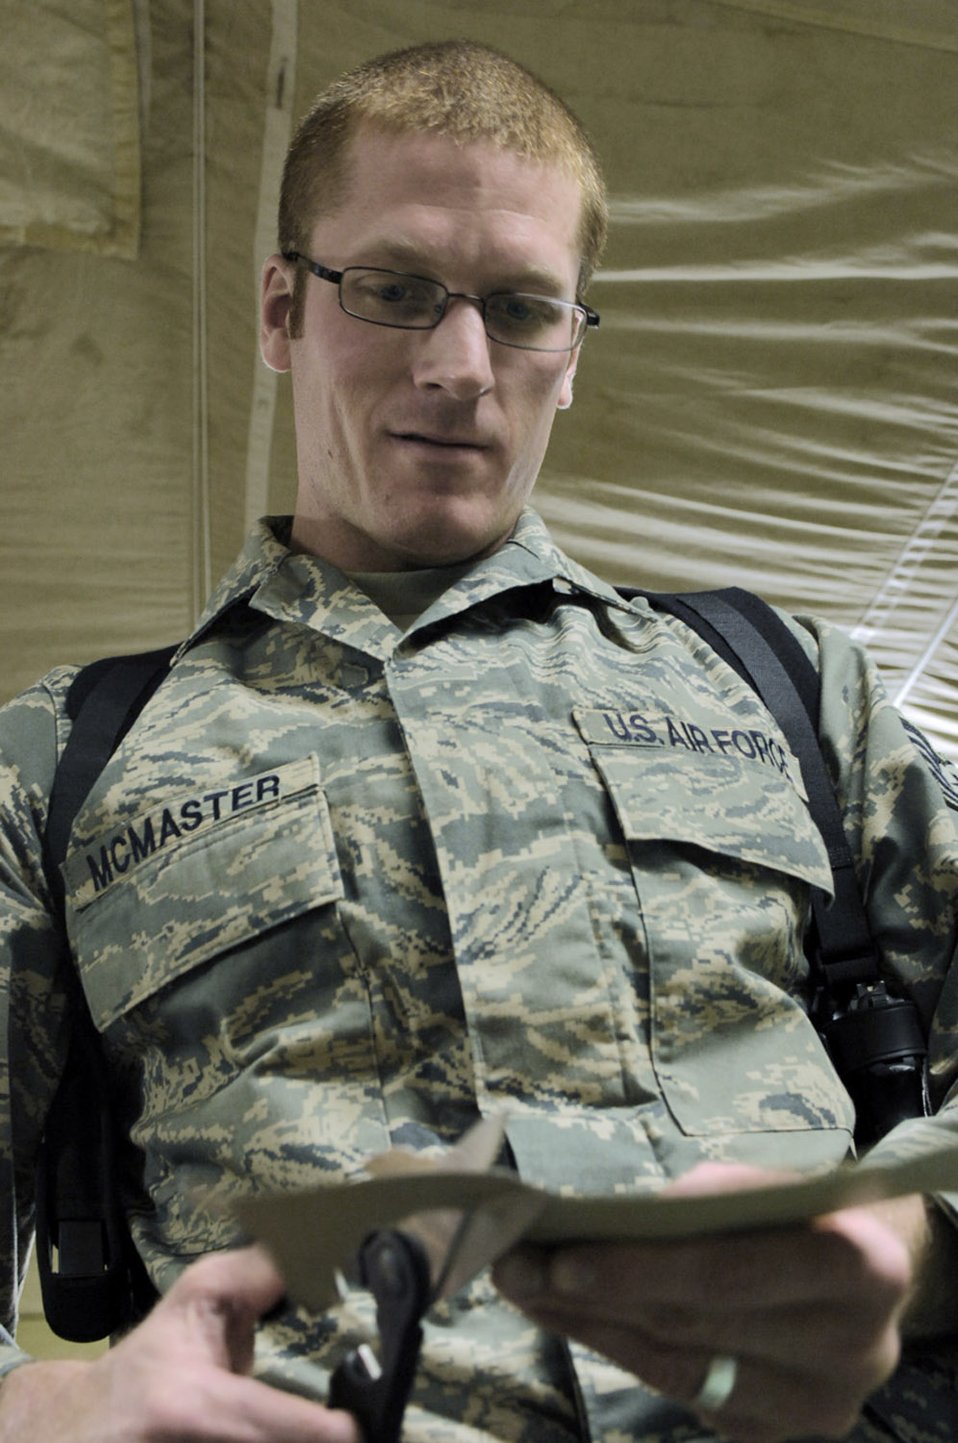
Holiday spirit in Afghanistan

Tech. Sgt. Ryan McMaster cuts out cartoon characters for a holiday diorama he created from locally-procured materials Dec. 14 at Bagram Air Base, Afghanistan. Sergeant McMaster is an aircrew life support technician with the 774th Expeditionary Airlift Squadron.